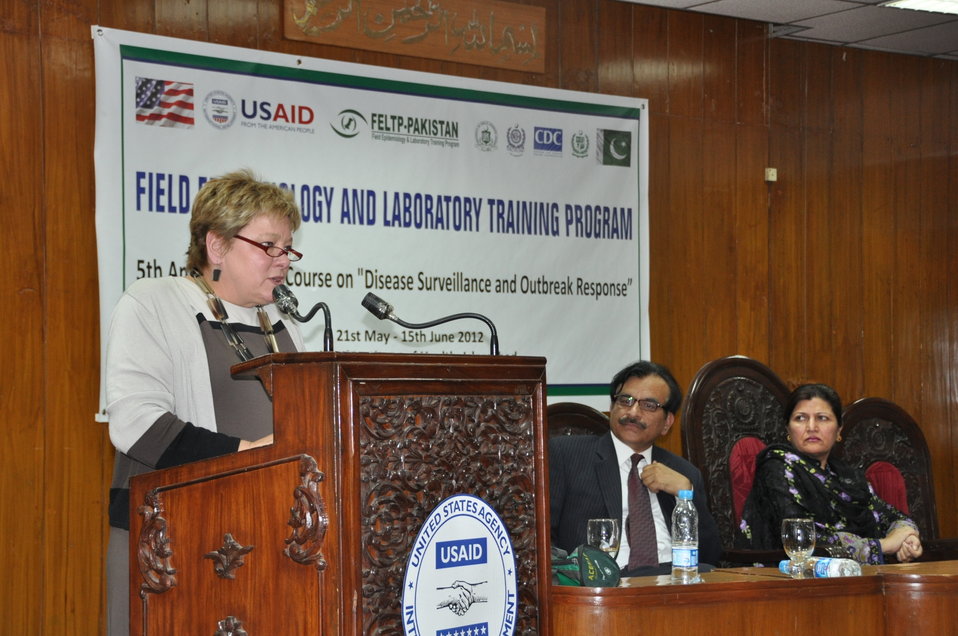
Field Epidemology and Laboratory Training Program